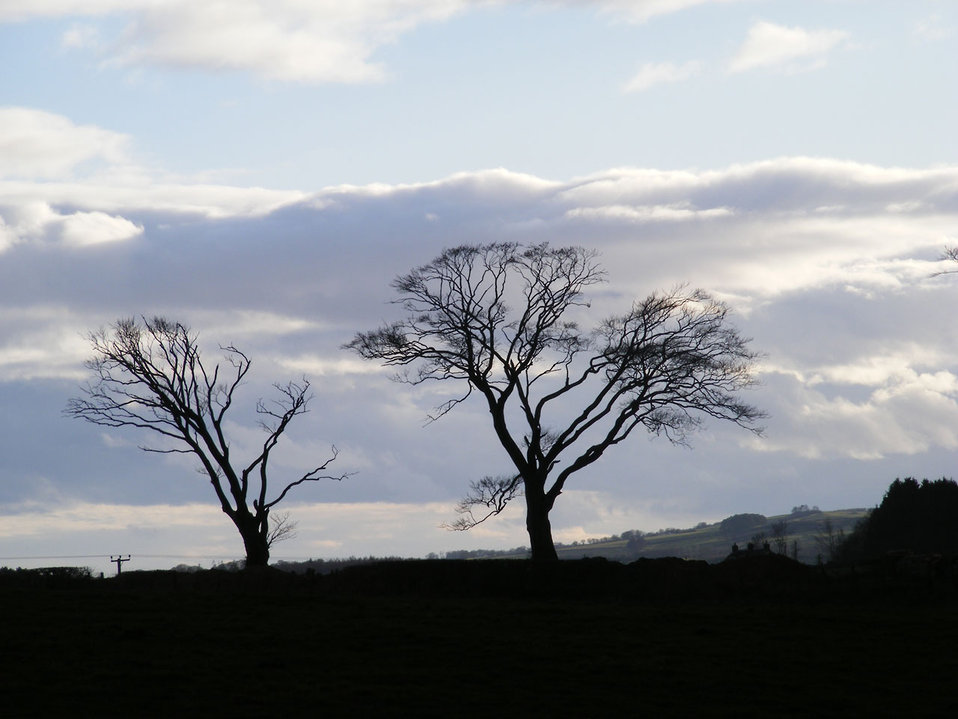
Silhouettes

Tree silhouette.